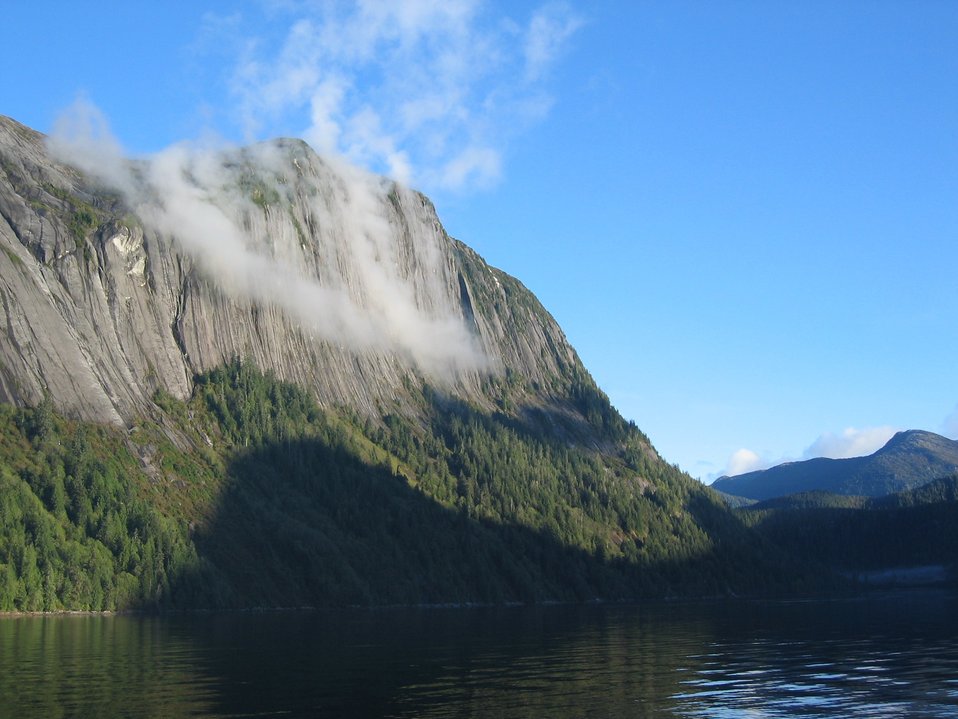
Mist-draped cliffs in the Rudyerd Bay.